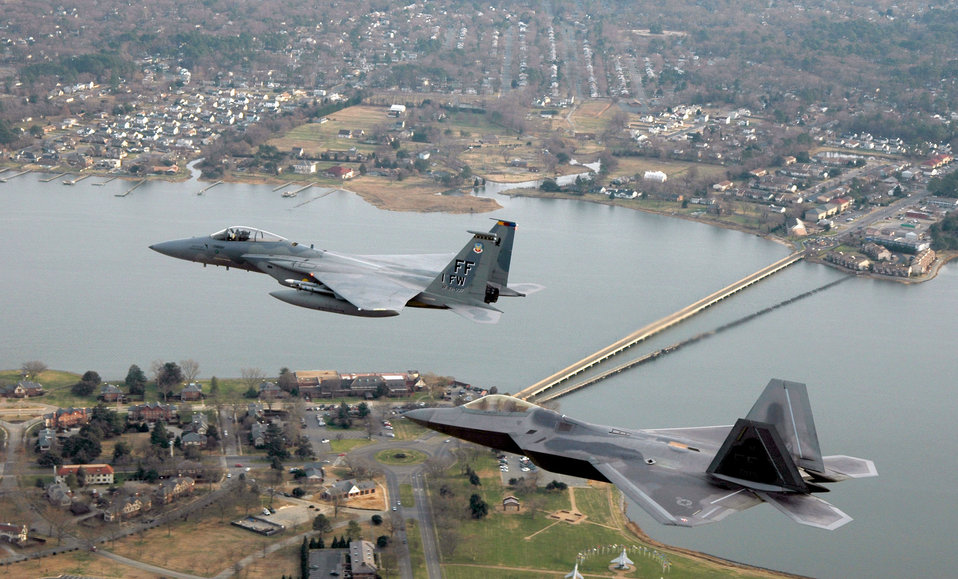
F-22s set for first overseas deployment

An F-22 Raptor and an F-15 Eagle fly over Langley Air Force Base, Va., during a training mission. F-22s and Airmen from Langley's 27th Fighter Squadron will deploy to the Pacific in February.